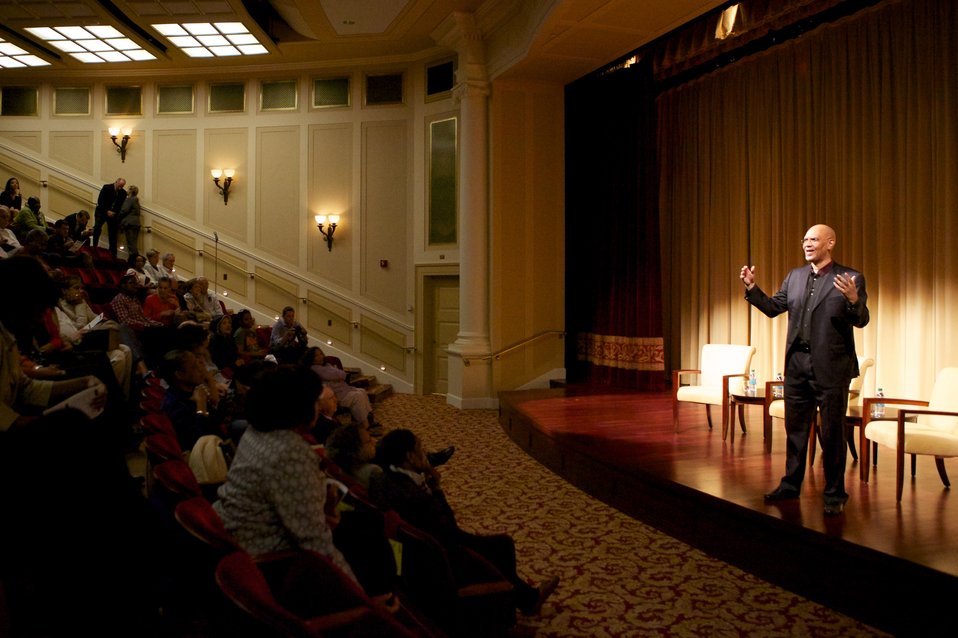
Solomon Northup's Odyssey